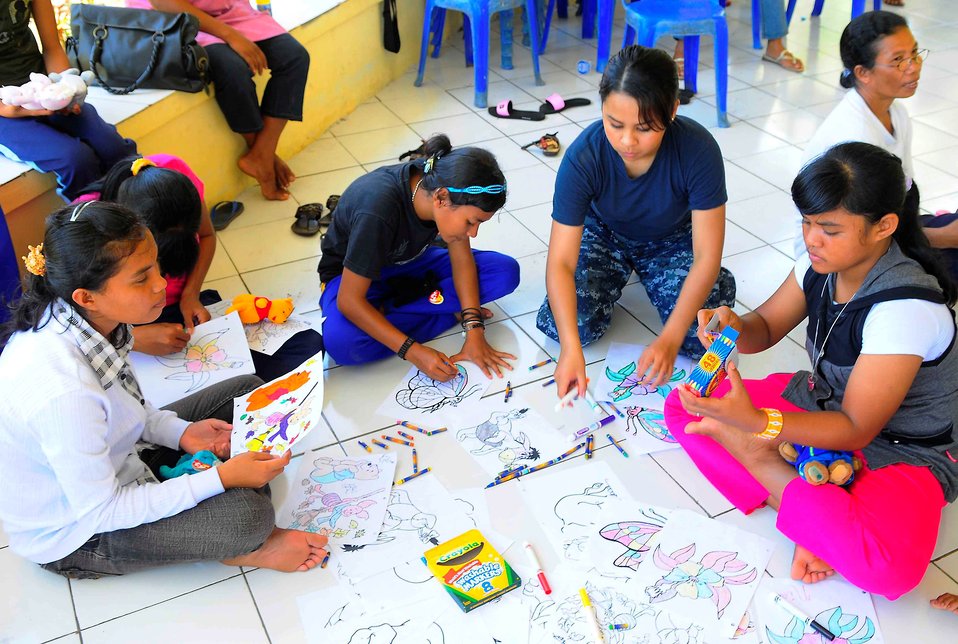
Yeoman 3rd Class Adrina Vasquez Colors With Indonesian Girls

Yeoman 3rd Class Adrina Vasquez, currently embarked aboard the Military Sealift Command hospital ship USNS Mercy (T-AH 19), colors on coloring books with several girls at the Rumah Sejahtera Bagi Anak Orphanage, during a community service event in support of Pacific Partnership 2010 in Tobelo, Indonesia, on July 14, 2010. Pacific Partnership 2010 is the fifth in a series of annual U.S. Pacific Fleet endeavors conducted in Indonesia as a disaster relief exercise to strengthen regional partnerships.